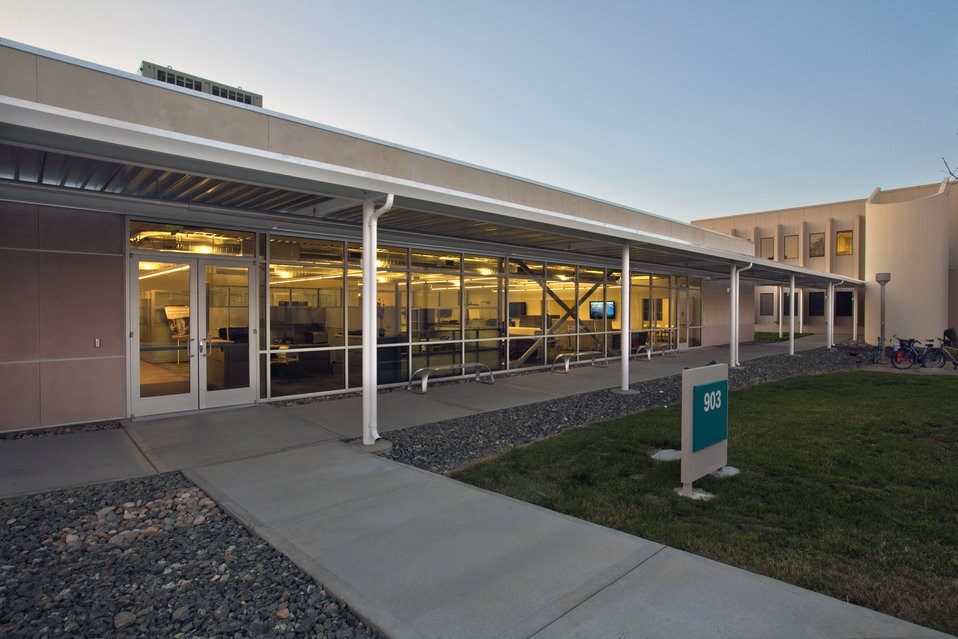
The Combustion Research Computation and Visualization (CRCV) Laboratory at the Combustion Research Facility (CRF) was dedicated Jan. 19, 2011 at Sandia National Laboratory..

The building provides additional resources and collaboration space to develop new sophisticated models and predictive capabilities that are critical to the development of future efficient engines and reduced pollutants. It was cofunded by two Department of Energy offices-Science and Energy Efficiency and Renewable Energy. The CRCV provides interactive data visualization and collaborative workspaces as well as a 2,000-square-foot machine room for dedicated computational capability.